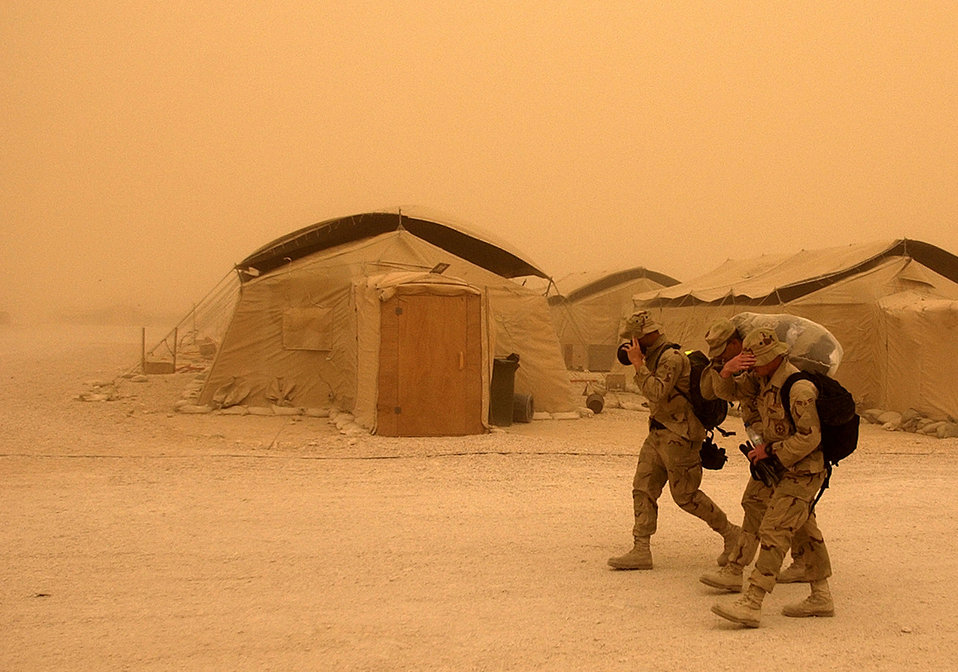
Desert sand storm

OPERATION IRAQI FREEDOM -- Airmen struggle to walk through a heavy sand storm at this forward-deployed air base March 26. Troops supporting Operation Iraqi Freedom are battling sand storms throughout the Middle Eastern region.